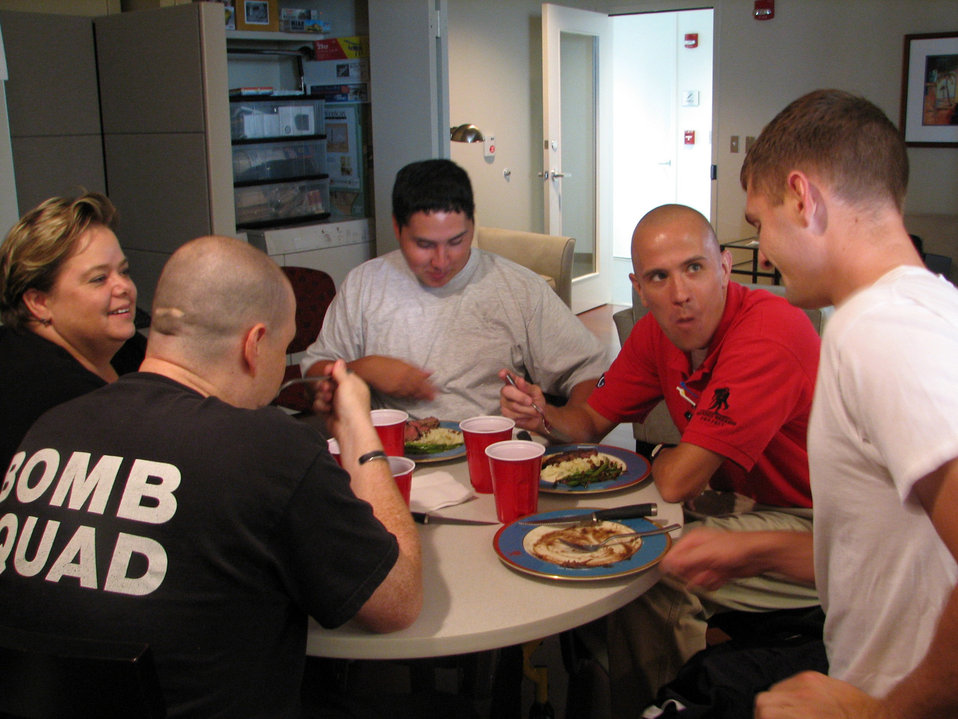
Airmen bring joy through cooking at Center for the Intrepid

Annette Slaydon (from left to right), Staff Sgt. Matt Slaydon, Airman 1st Class Kevin Krogh, Chris Ebner, and Marine Cpl. Travis Dodson enjoy a meal at the Center for the Intrepid June 24 in San Antonio. The lunch was prepared by Tech. Sgt. Jason Simas and Staff. Sgt. Michael Leo. The sergeants are enlisted aides to the Air Education and Training Command commander and vice commander. They volunteered their culinary talents to support Airmen and others at the Center for the Intrepid.